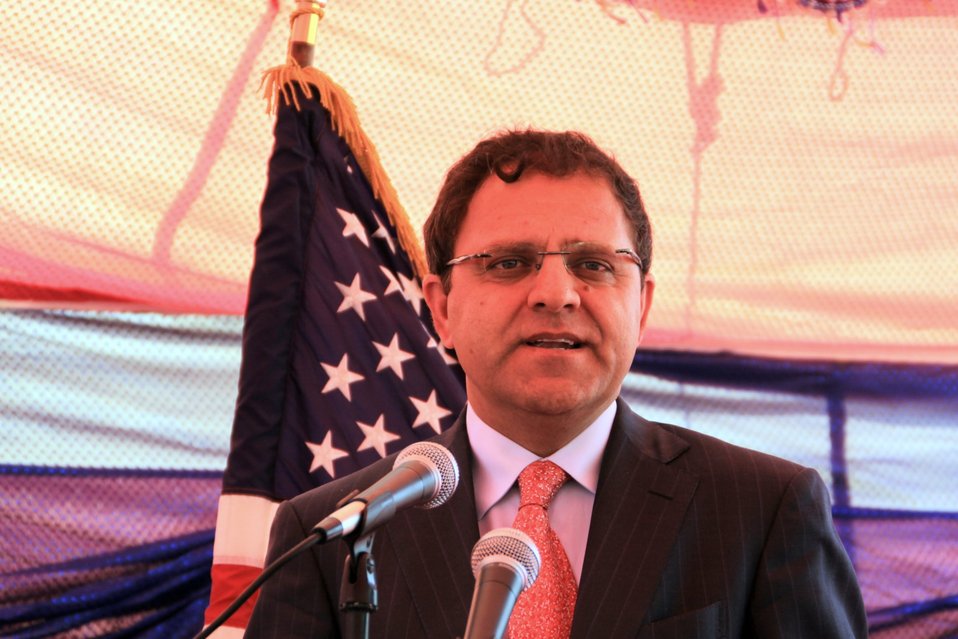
Badam Bagh Farm